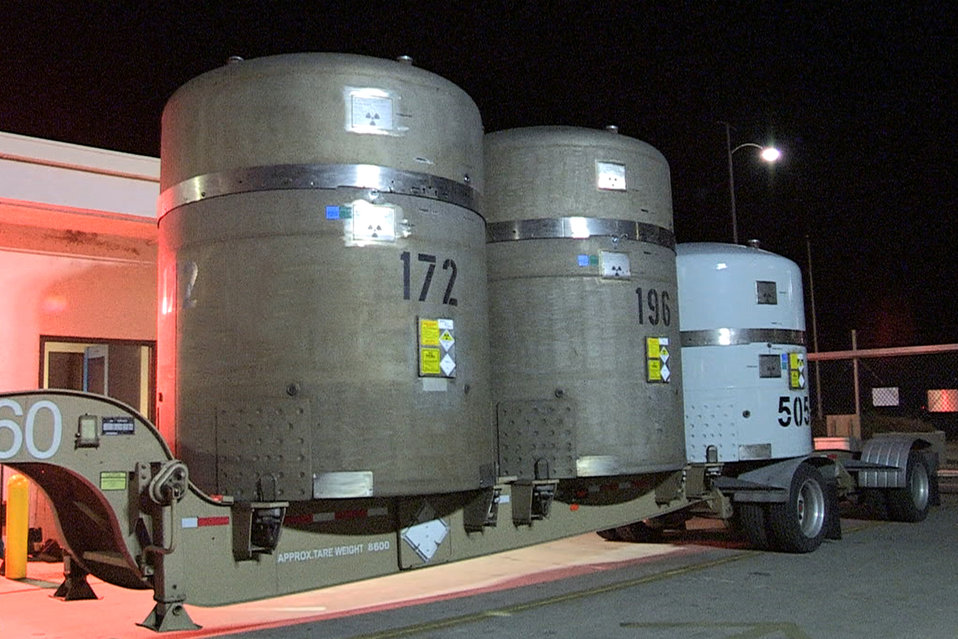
The Department of Energy Announces Major Cold War Legacy Waste Cleanup Milestone

The U.S. Department of Energy today (September 27, 2011) announced that the Waste Isolation Pilot Plant (WIPP) received its 10,000th shipment of transuranic (TRU) waste over the weekend. This marks an important milestone in DOE’s mission to clean up the country’s Cold War legacy.

WIPP is a DOE facility designed to safely isolate defense-related TRU waste from people and the environment. Waste temporarily stored at sites around the country is shipped to WIPP and permanently disposed in rooms mined out of an ancient salt formation 2,150 feet below the surface. WIPP is located 26 miles outside of Carlsbad, N.M.